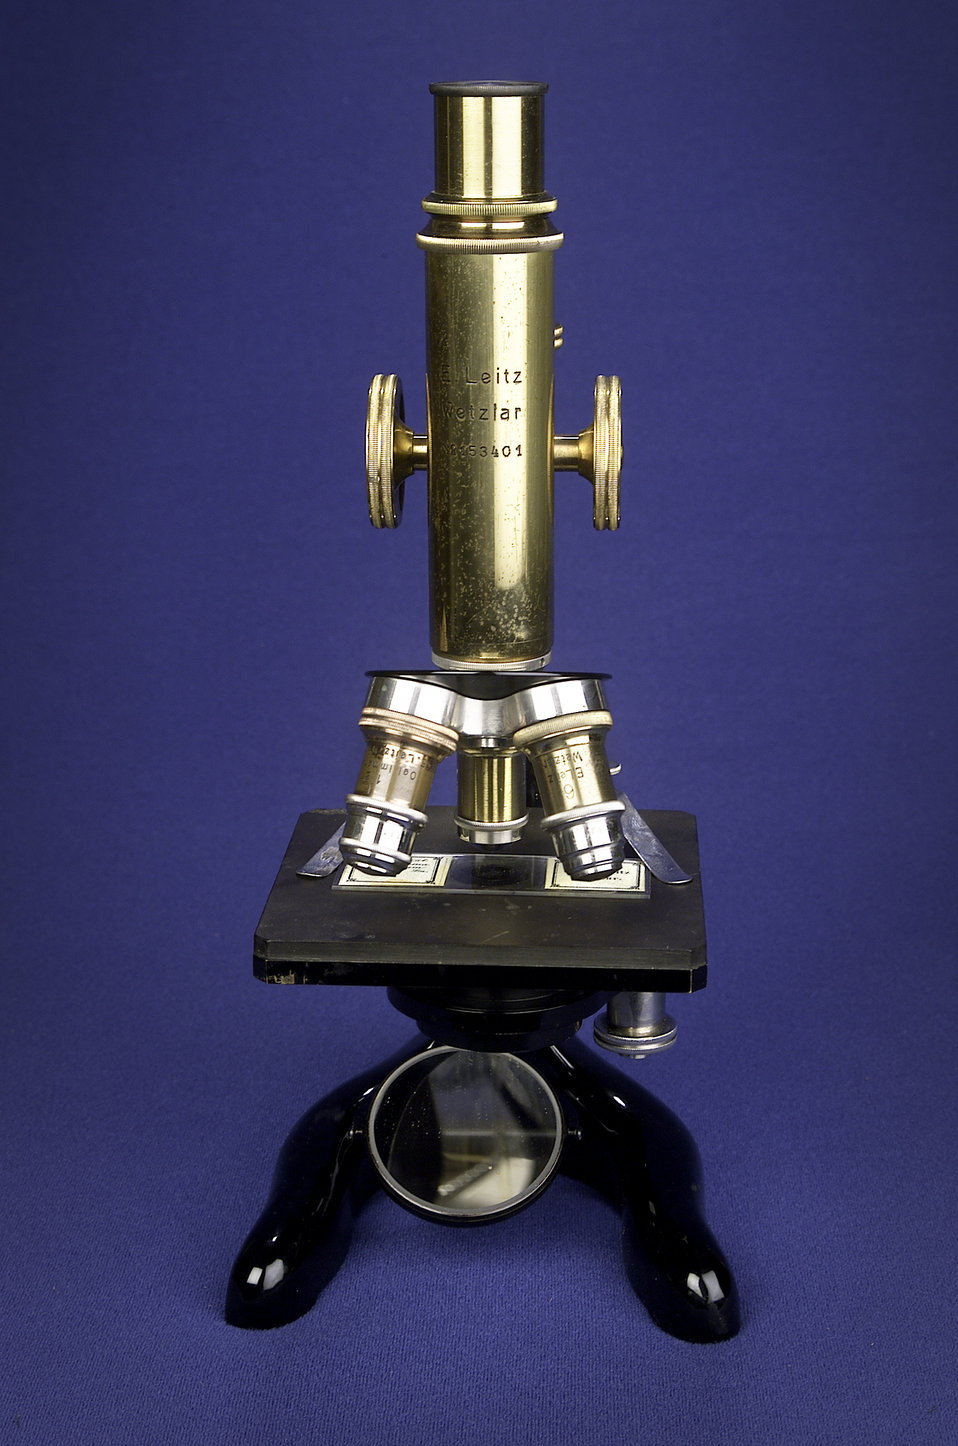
This is the 1913 E. Leitz-Wetzlar microscope that Dr. Mountin used in medical school and early in his career as a physician.